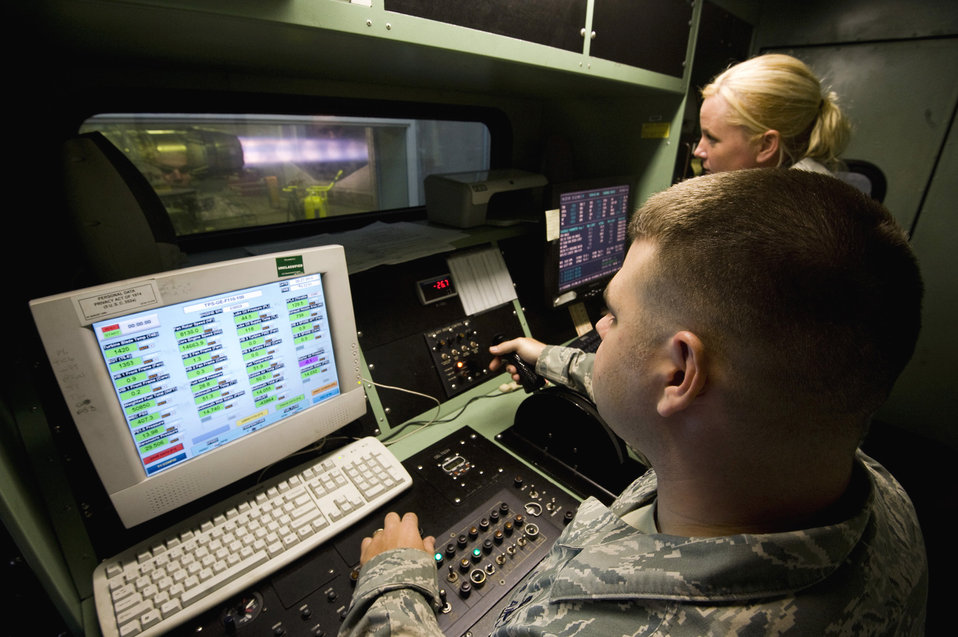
Test cell Airmen prep F-16 engines for flight

Staff Sgts. Jared Langston and Tracy Madris throttle up an engine from an F-16 Fighting Falcon for a test run in the hush house May 27, 2010, at Misawa Air Base, Japan. The sound-dampening control room protects operators from the 139-decibel roar of the engine. Sergeants Langston and Madris are 35th Maintenance Squadron aerospace propulsion test cell technicians.